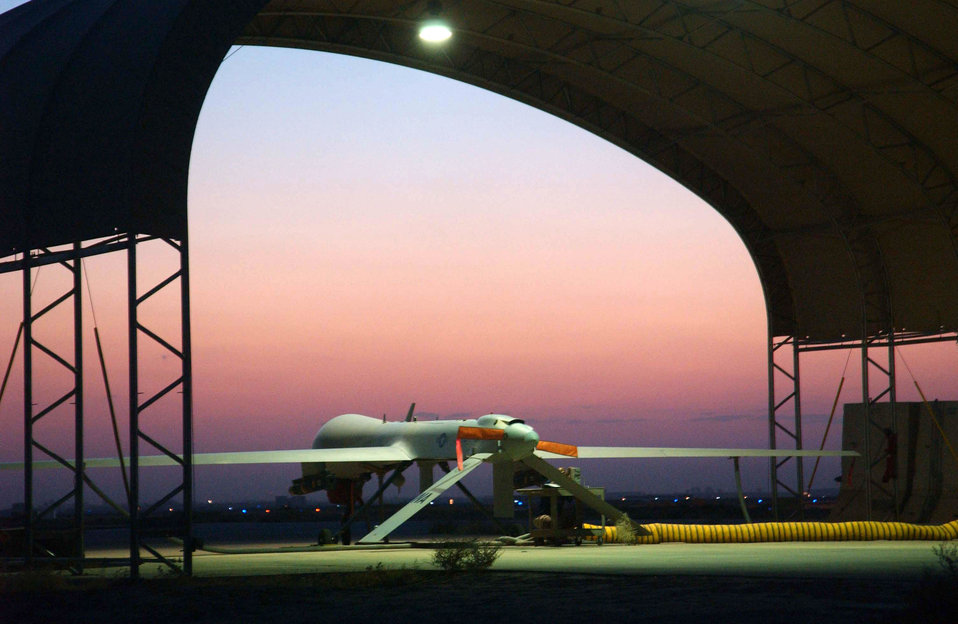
Waiting for the night

An MQ-1 Predator unmanned aerial vehicle basks in a desert sunset at Balad Air Base, Iraq, on July 9. Assigned to the 332nd Air Expeditionary Wing, the Predator is the most requested weapons system in the U.S. Central Command theater.